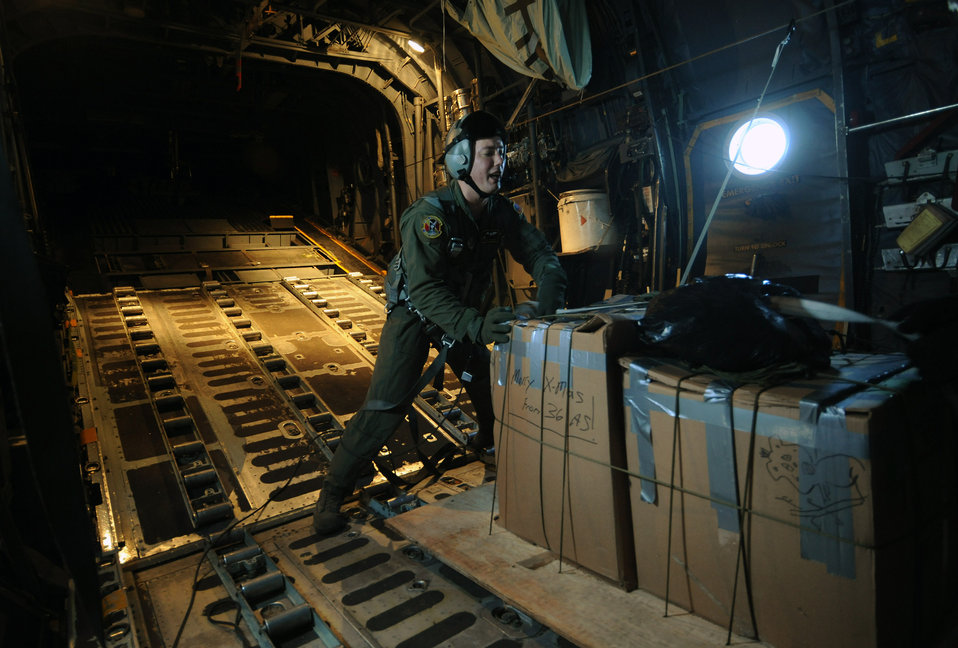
Operation Christmas Drop

Tech. Sgt. Heath Bahyi pushes boxes of donated goods in place on a C-130 Hercules during Operation Christmas Drop Dec. 19 over the Pacific Ocean. Airmen today continue the tradition of delivering supplies to remote islands of the Commonwealth of the Northern Marianas Islands, Yap, Palau, Chuuk and Pohnpei. In all, more than 180 boxes were built for the humanitarian mission, making 2008 one of the largest drops in Operation Christmas Drop's 57-year history. Sergeant Bahyi is a loadmaster from the 36th Airlift Squadron from Yokota Air Base, Japan.